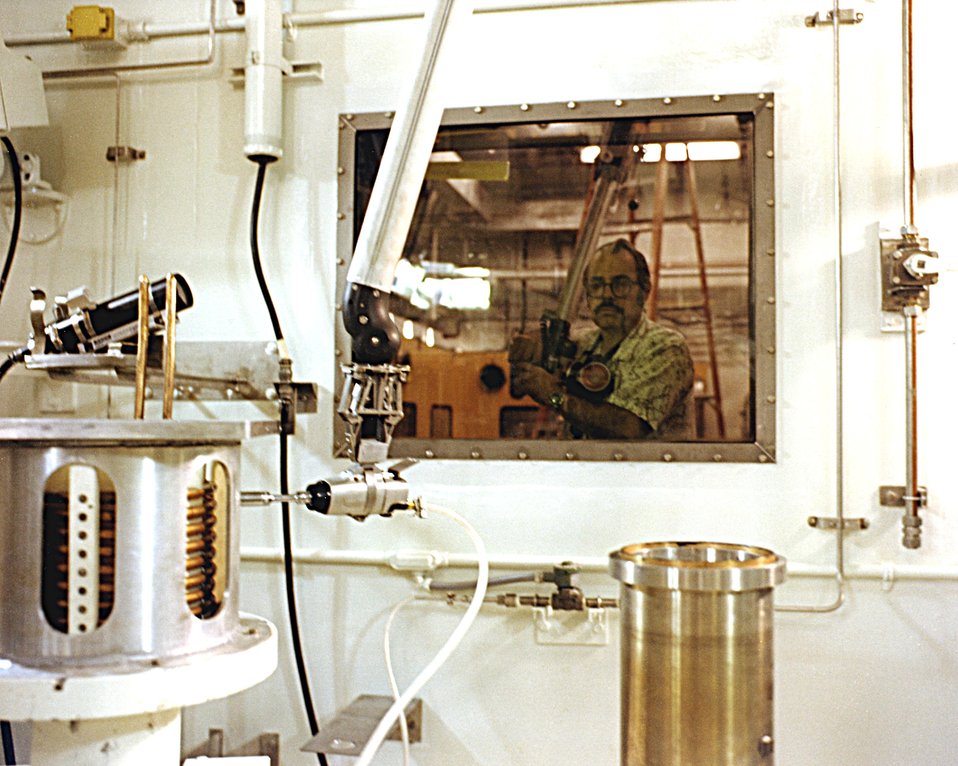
REMOTE MANIPULATOR IN BUILDING 371.

ALL PLUTONIUM OPERATIONS AT THE PLANT ARE CARRIED OUT IN HIGHLY SPECIALIZED FACILITIES, PROTECTING THE EMPLOYEES AND THE SURROUNDING POPULATION AND ENVIRONMENT. THE BUILDING IS DESIGNED TO WITHSTAND TORNADO, EARTHQUAKE, SNOW STORM, AND FLOOD DAMAGE. THE FACILITY IS ONE LARGE STRUCTURE DIVIDED INTO THREE AREAS: PLUTONIUM RECOVERY, WASTE TREATMENT, AND SUPPORT. PERSONNEL PROTECTION IS PROVIDED BY SPECIAL PROTECTION DEVICES, FOR EXAMPLE, PLUTONIUM IS HANDLED REMOTELY FROM INSTRUMENTED CONTROL ROOMS, IN ED GLOVEBOXES, AND IN CONCRETE VAULT CANYONS. THIS FACILITY IS CURRENTLY BEING REEVALUATED TO DEVELOP A REVISED AND UPGRADED PROCESS.